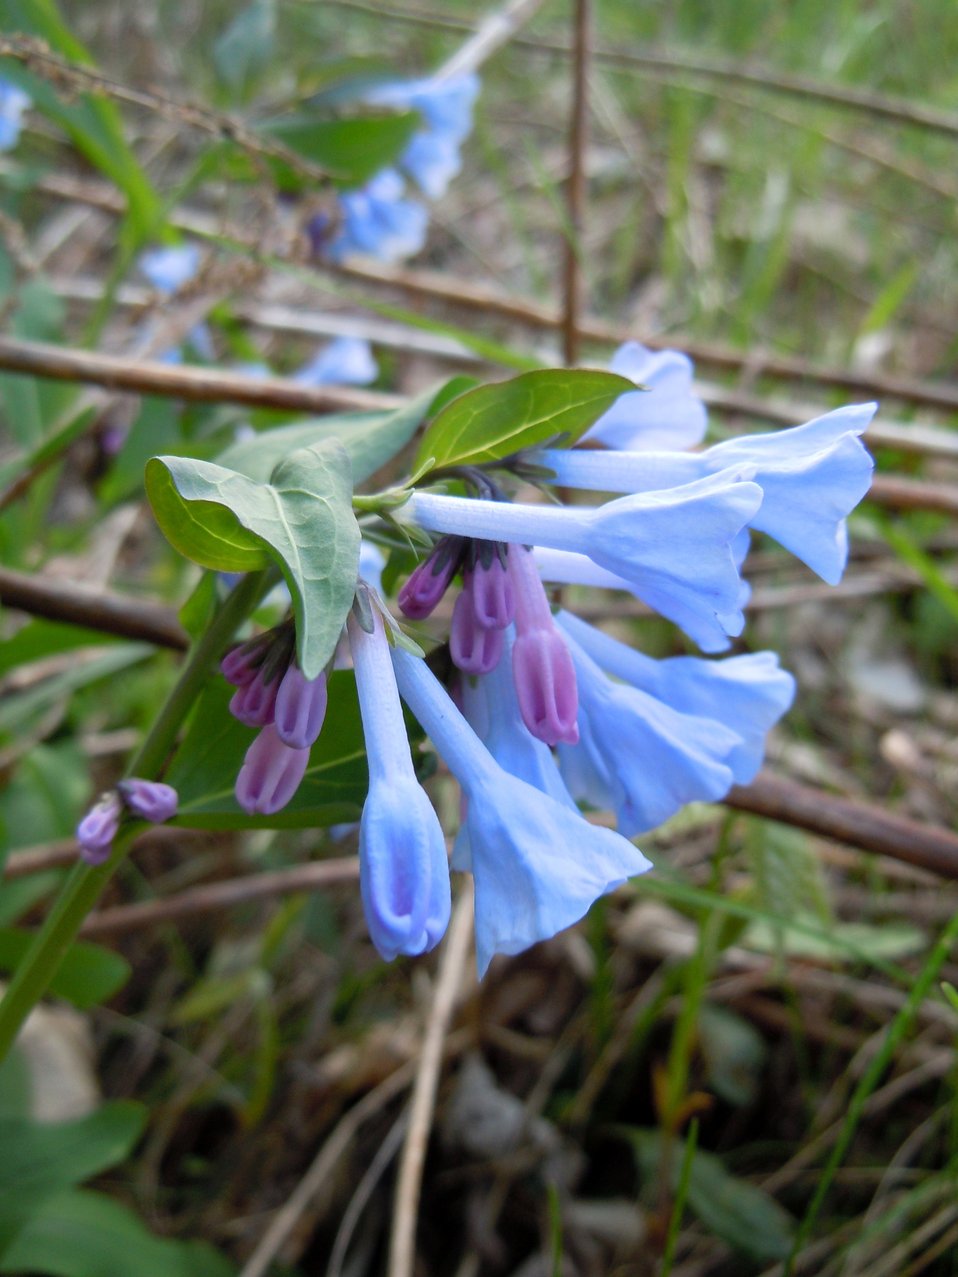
Virginia Bluebell